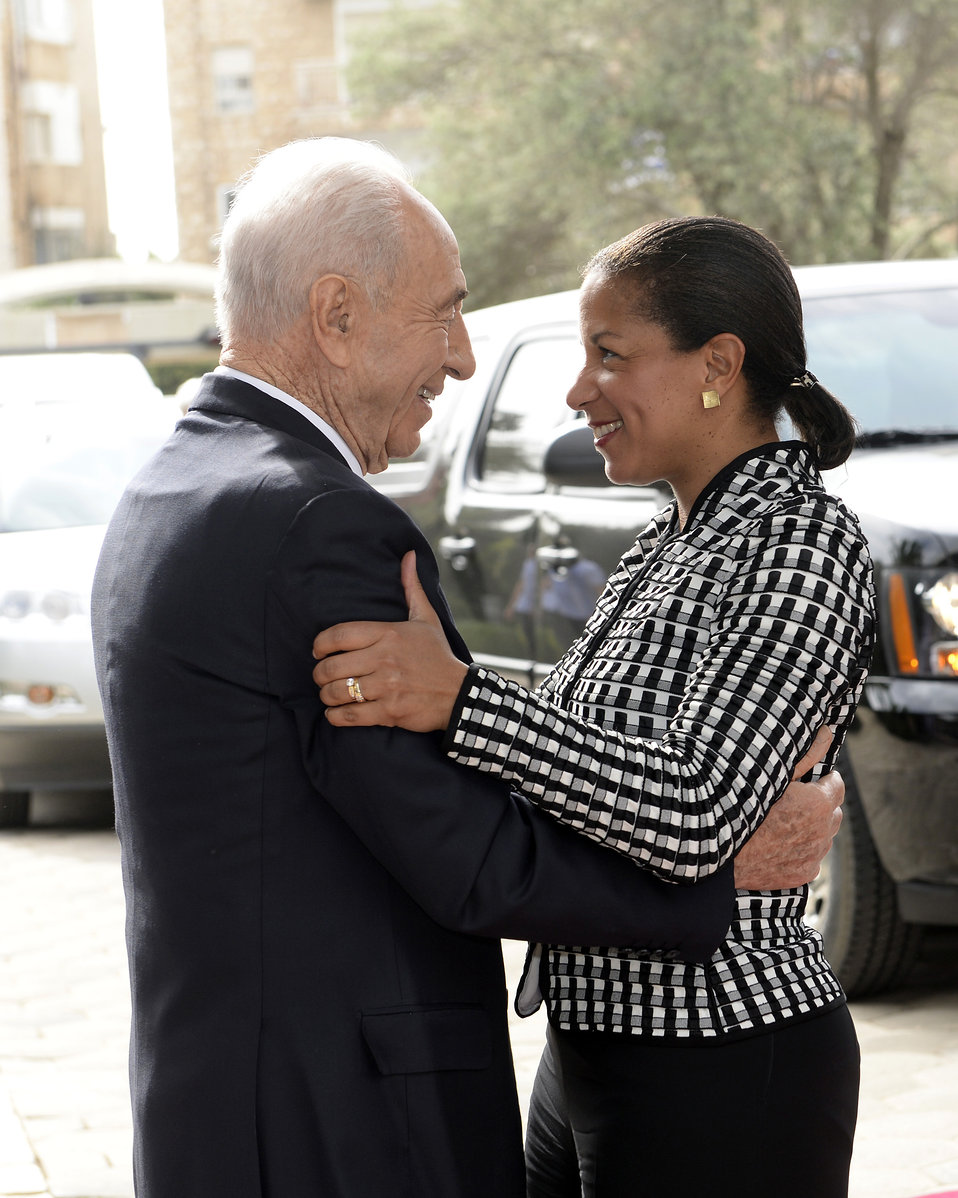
Israeli President Peres Welcomes Ambassador Rice

Israeli President Shimon Peres welcomes Ambassador Susan Rice, the President’s National Security Advisor, before their meeting in Jerusalem on May 7, 2014.